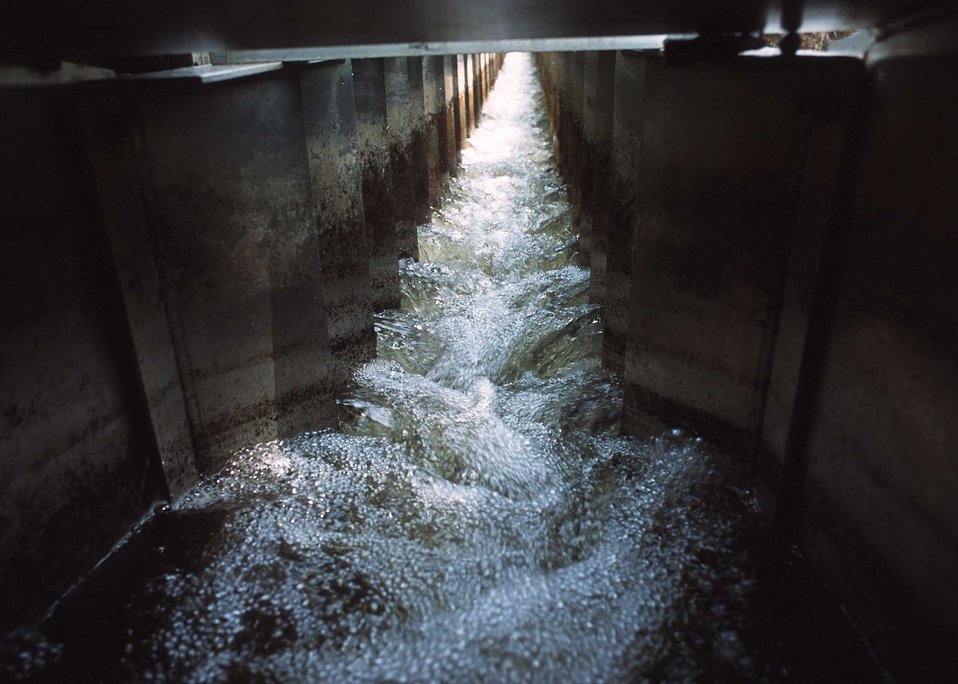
A view looking up and Alaskan Steeppass fishway.